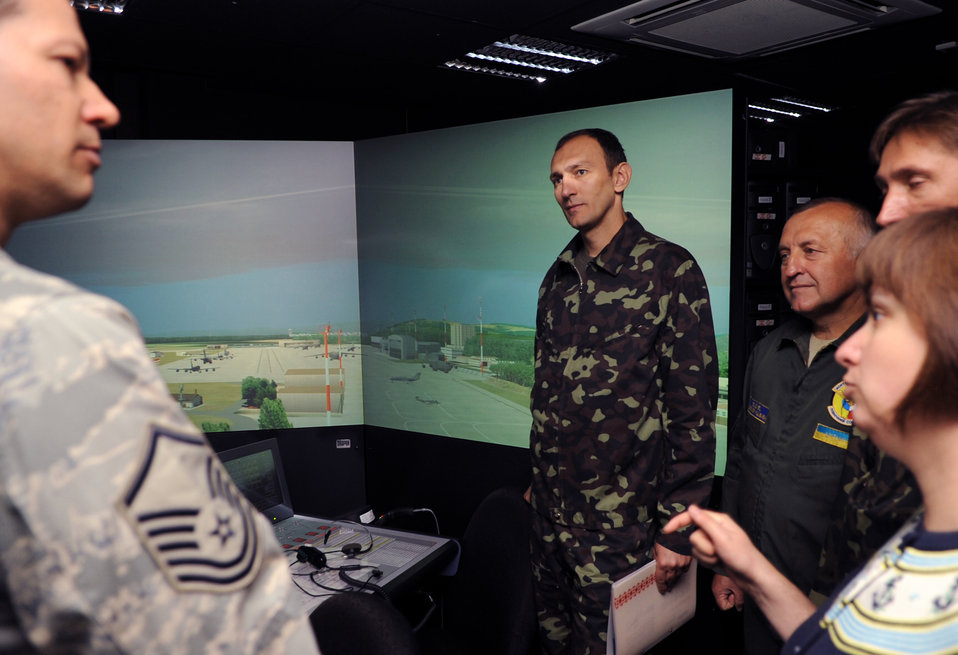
Ukrainian airmen visit Ramstein

Master Sgt. Roy Wanner gives a tour of the air traffic control training simulation room to Ukrainian air force members June 23, 2010, during a visit to Ramstein Air Base, Germany. The goal of the Ukrainian visit was to help advance military interoperability and build international partnerships. Sergeant Wanner is the 86th Operations Support Squadron air traffic control complex chief controller.